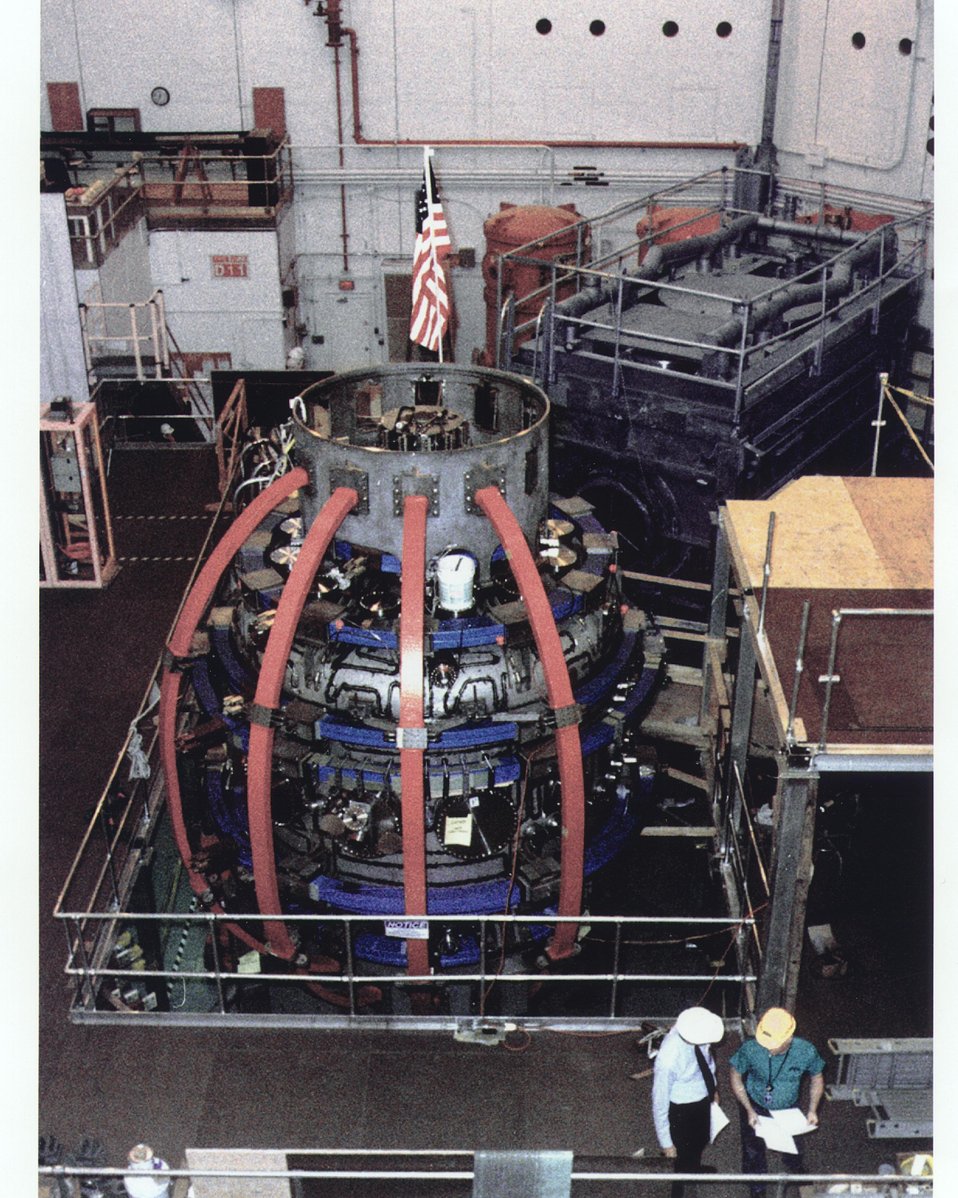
THE NATIONAL SPHERICAL TORUS EXPERIMENT (NSTX) AT PRINCETON PLASMA PHYSICS LABORATORY.

NSTX, A MAGNETIC FUSION DEVICE CONSTRUCTED BY PPPL IN COLLABORATION WITH OAK RIDGE NATIONAL LAB, COLUMBIA UNIV. AND THE UNIVERSITY OF WA , OBTAINED FIRST PLASMA FEB. 12, 1999. NSTX WILL BE USED TO STUDY PHYSICS PRINCIPLES OF SPHERICALLY SHAPED PLASMAS-HOT IONIZED GASES IN WHICH NUCLEAR FUSION WILL OCCUR UNDER THE RIGHT CONDITIONS OF TEMPERATURE, DENSITY AND CONFINEMENT IN A MAGNETIC FIELD. SCIENTISTS FEEL THAT FUSION, THE ENERGY SOURCE OF THE SUN AND ALL STARS, CAN PROVIDE AN INEXHAUSTIBLE, SAFE, AND ENVIRONMENTALLY SOUND SOURCE OF ENERGY.